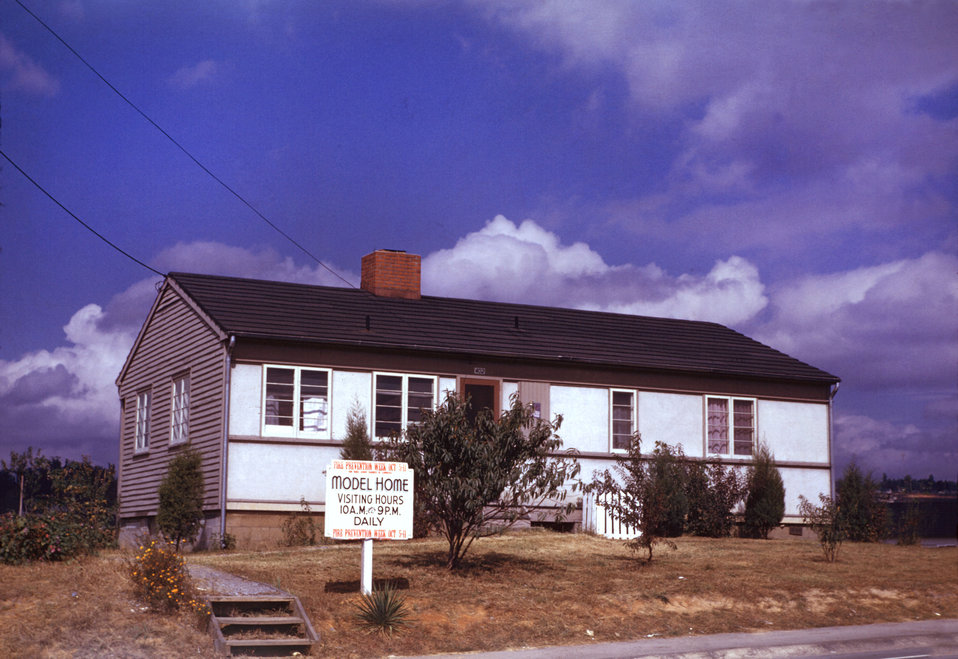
Model House Oak Ridge

DOE photo by Ed Westcott

Model House Oak Ridge Tennessee 1940s